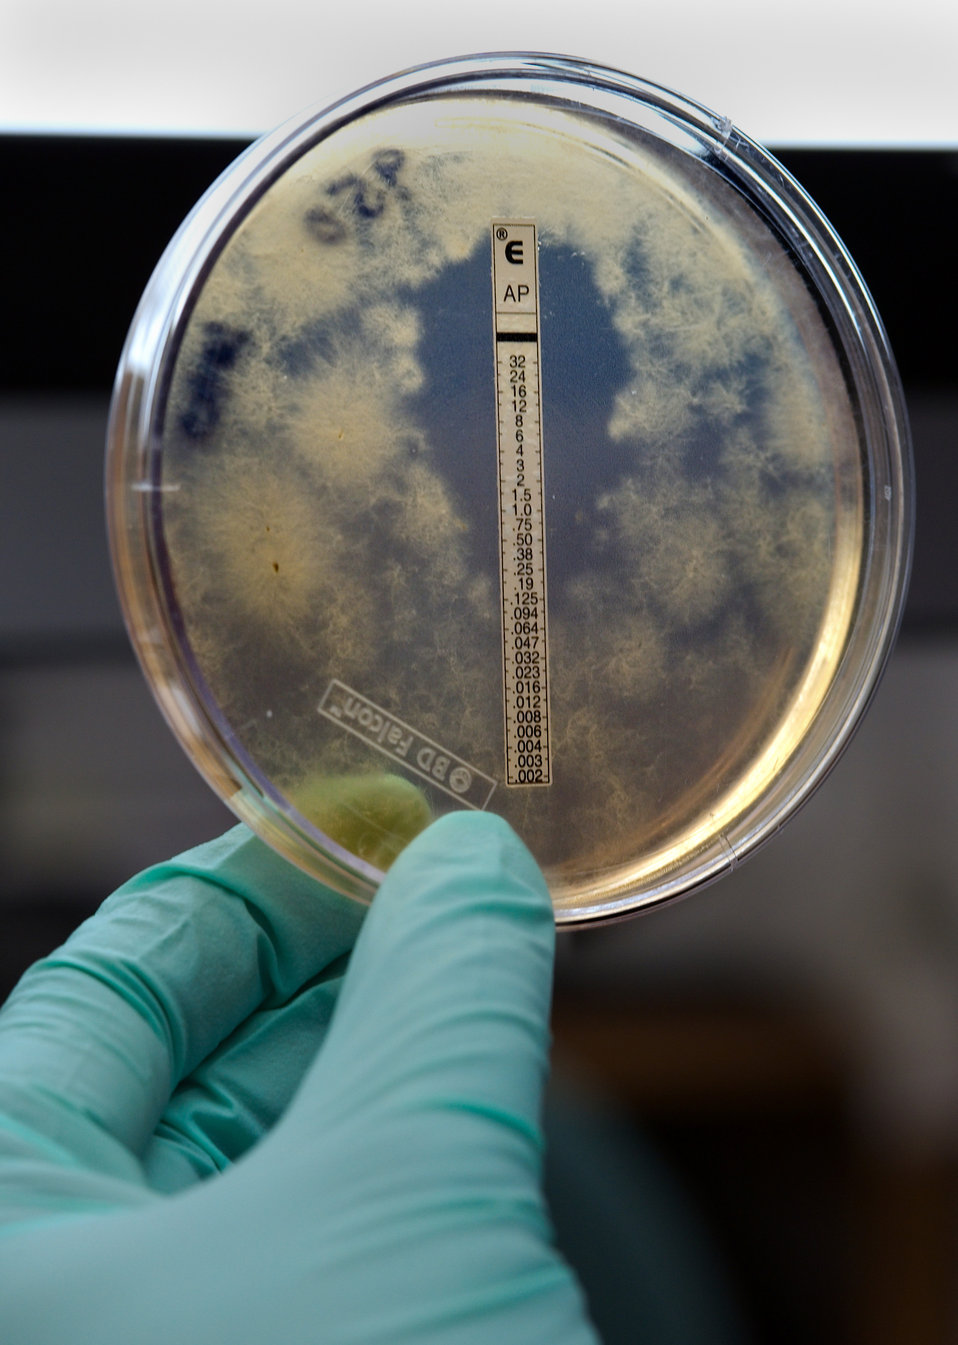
A slightly closer view than PHIL 15147, this photograph was captured during the Centers for Disease Control and Prevention's (CDC) multistate meningitis outbreak investigation. This culture plate revealed the results of a susceptibility test to the antifungal drug amphotericin B. The drug inhibited growth of the fungal organism Exserohilum in the clear area where the amphotericin B had diffused into the medium, while the Exserohilum organisms were growing elsewhere on the plate, where the drug had not diffused into the medium.